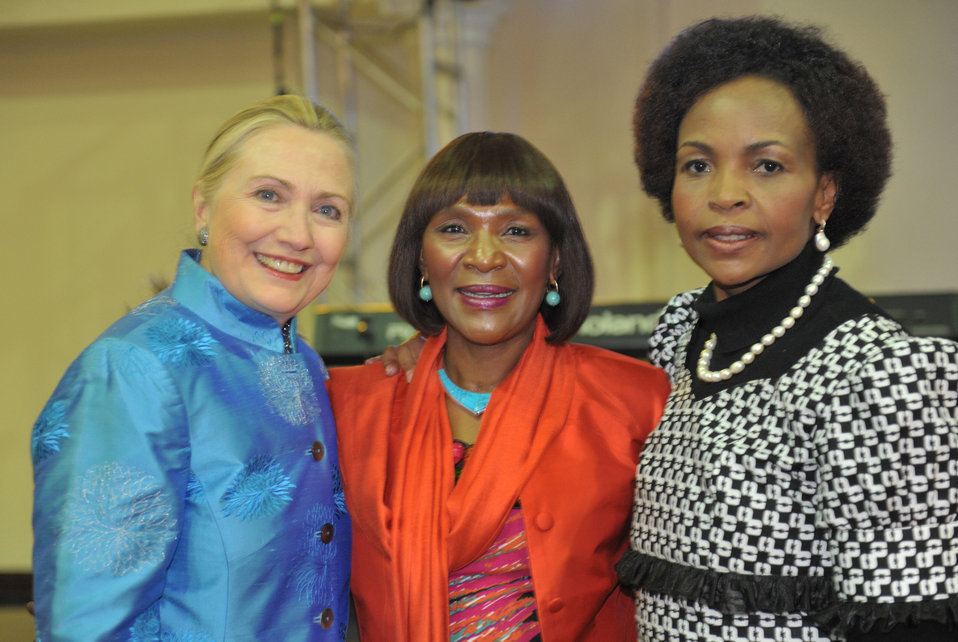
Secretary Clinton Poses for a Photo With DIRCO Deputy Director Nozipho Mxakato-Diseko and South African Foreign Minister Nkoana-Mashabane

U.S. Secretary of State Hillary Rodham Clinton speaks with DIRCO Deputy Director Nozipho Mxakato-Diseko and South African Foreign Minister Nkoana-Mashabane at a dinner hosted by Foreign Minister Nkoana-Mashabane in Johannesburg, South Africa, on August 7, 2012.